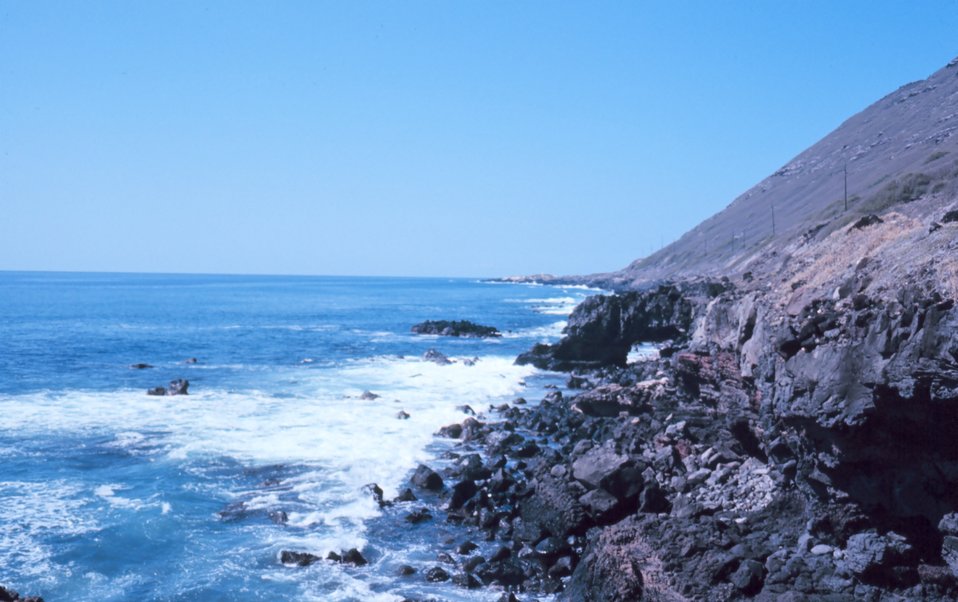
Waianae coast -southwest Oahu